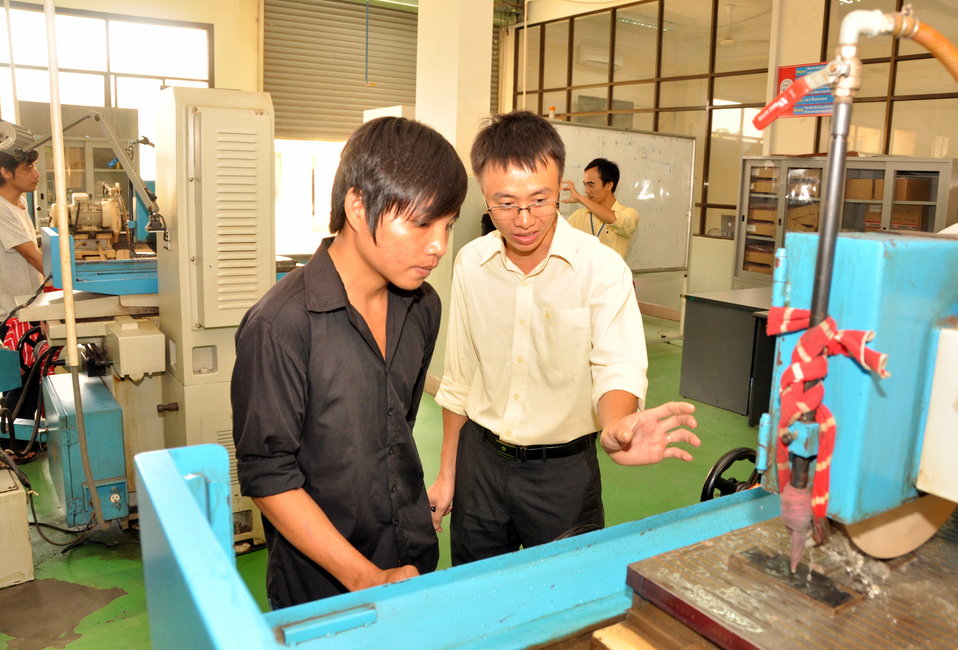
Ho Chi Minh Vocational College of Technology

Vu The Manh, lecturer of Mechanical Engineering Faculty at the Ho Chi Minh Vocational College of Technology

Photo: January 11, 2013, Richard Nyberg @USAIDVietnam